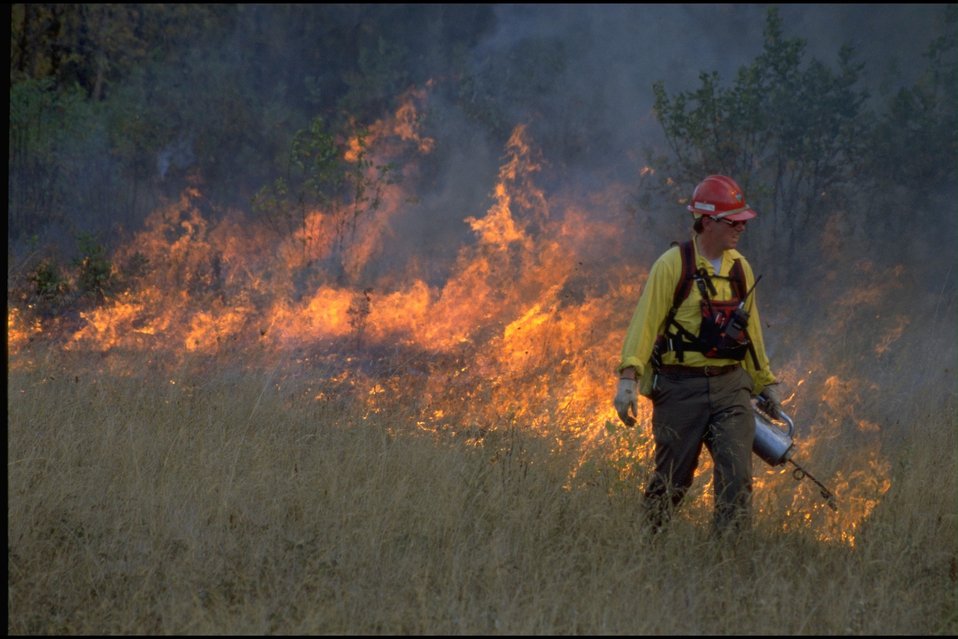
Long Tom ACEC burn (Eric Meyers).